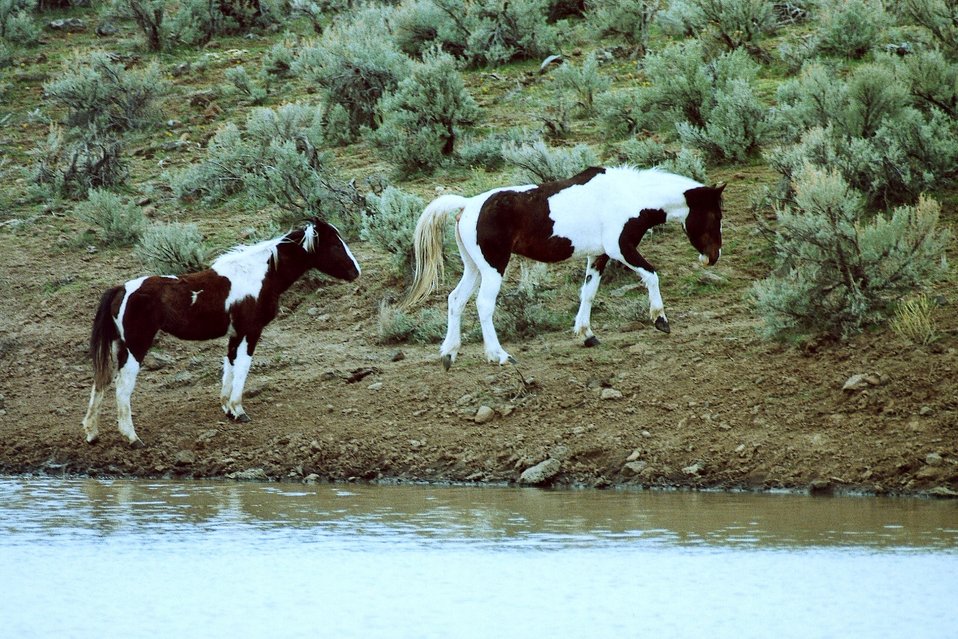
Medium shot of two mares by South Steens Livestock Resevior.